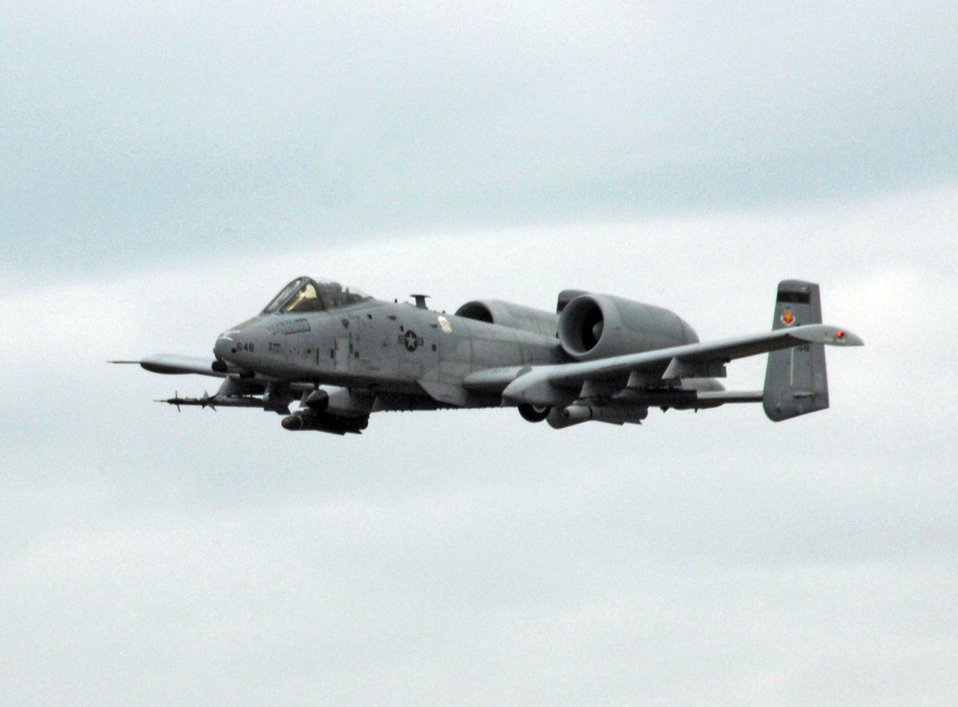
A-10 Thunderbolt II

An A-10 Thunderbolt II, like the one shown here, crashed April 1, 2011, near Wittlich, Germany.